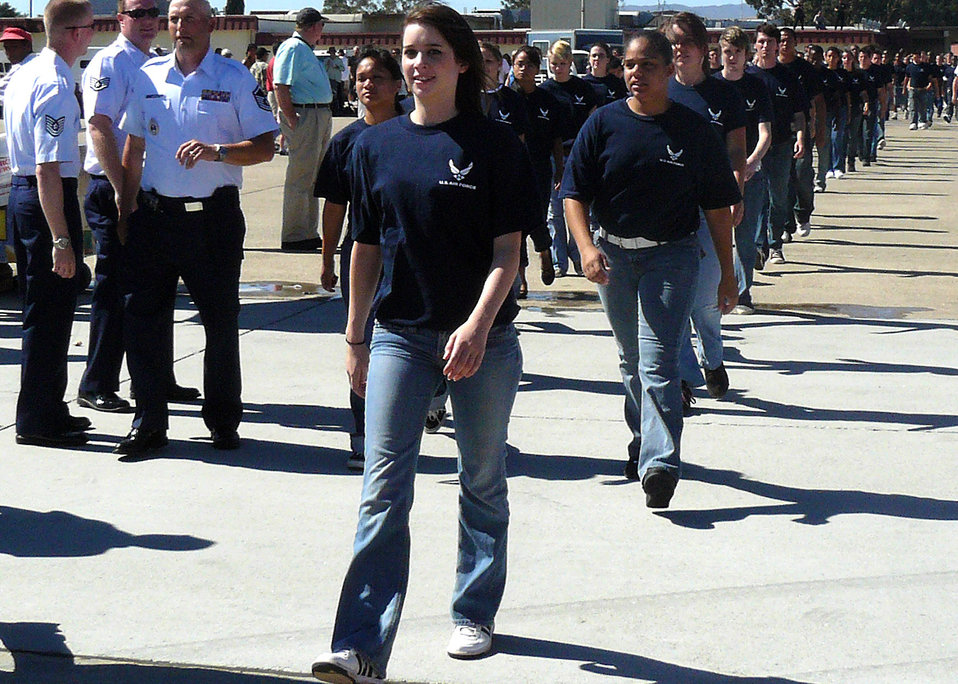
Record-setting swearing-in ceremony

Members of the 364th Recruiting Squadron Delayed Entry Program march out on the Travis Air Force Base, Calif., flightline Aug. 30 during Travis Air Expo 2008 to participate in the largest DEP swearing-in ceremony to date. Lt. Col. Greg Thomas, the Air Force Thunderbirds commander, administered the oath of enlistment to 154 future Airmen before a crowd of more than 80,000 airshow spectators.